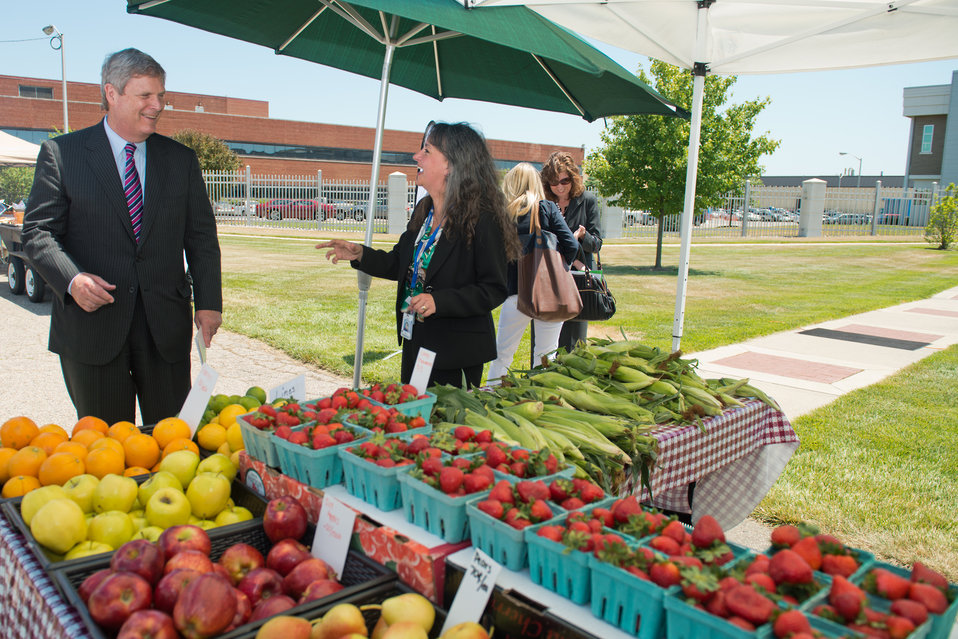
Agriculture Secretary Tom Vilsack checks out the fresh produce available to G.E. Aviation employees during a visit to the company’s popular seasonal Farmers’ Market at the company’s Learning Centre in suburban Cincinnati, OH on Wednesday, June 27, 2012. G.E. Aviation Health Services Manager Mary Farris speaks to Secretary Vilsack about the value of fresh fruit and produce. Secretary Vilsack was in Ohio to highlight the U.S. Department of Agriculture’s (USDA) collaboration with the Ohio Aerospace Institute, air carriers and producer groups to develop a Midwest-regional approach to providing renewable jet fuel at G.E Aviation’s Cincinnati-area facilities.